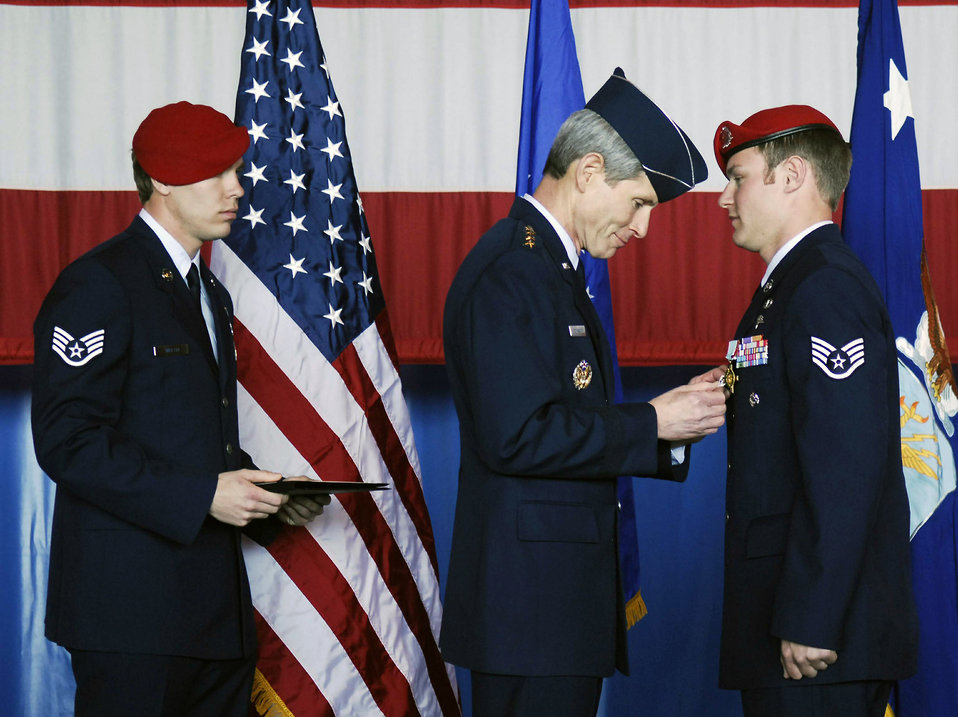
Combat controller receives Air Force Cross, Purple Heart

Air Force Chief of Staff Gen. Norton Schwartz presents Staff Sgt. Zachary Rhyner a Purple Heart March 10 at Pope Air Force Base, N.C. Sergeant Rhyner of the 21st Special Tactics Squadron received the medal and the Air Force Cross for uncommon valor during Operation Enduring Freedom for his actions during an intense 6.5-hour battle in Shok Valley, Afghanistan, April 6, 2008.